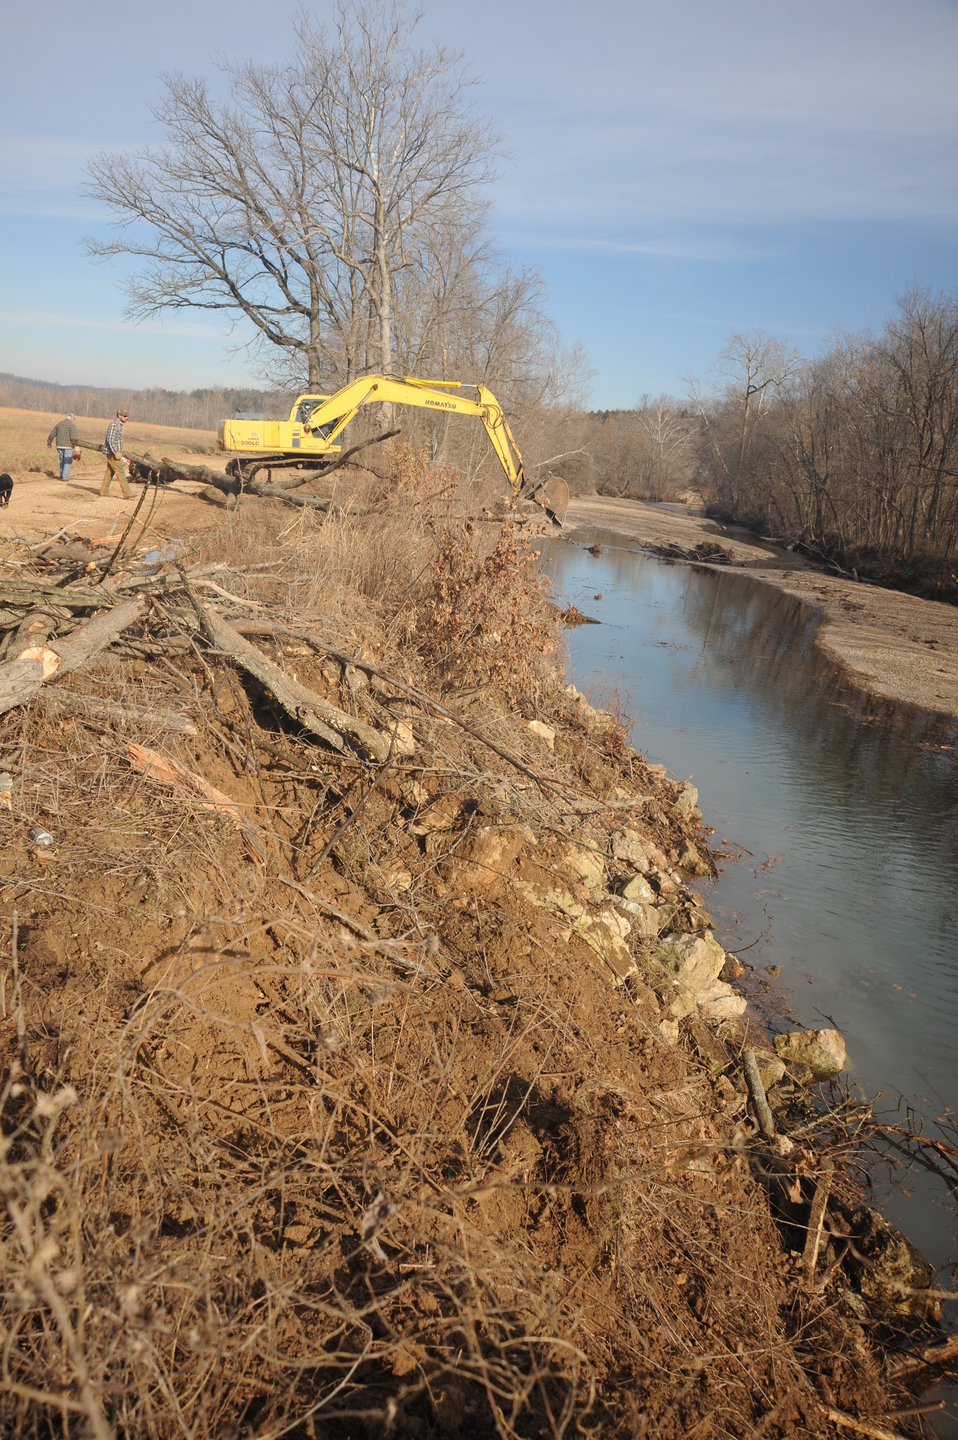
Ambrose Project in Progress

Looking downstream. Clearing away vegetation in order to gain access to the bank. Rock from a previous stabilization attempt by the county is visible.